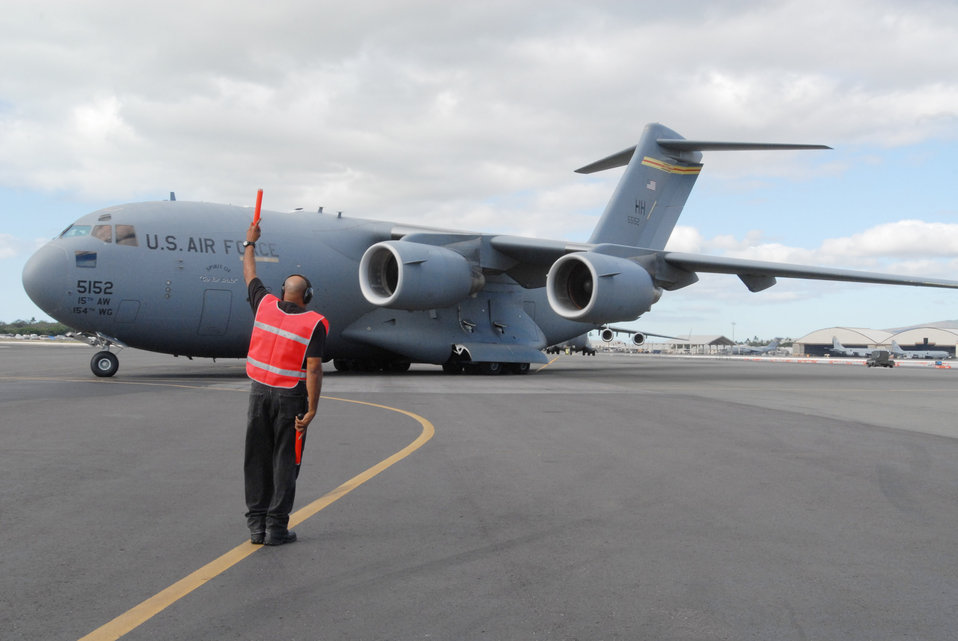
PACAF aircraft depart to assist Haiti relief effort

A C-17 Globemaster III departs Jan. 19, 2010, from Hickam Air Force Base, Hawaii, to Charleston AFB, S.C. to take part in humanitarian relief efforts in Haiti.